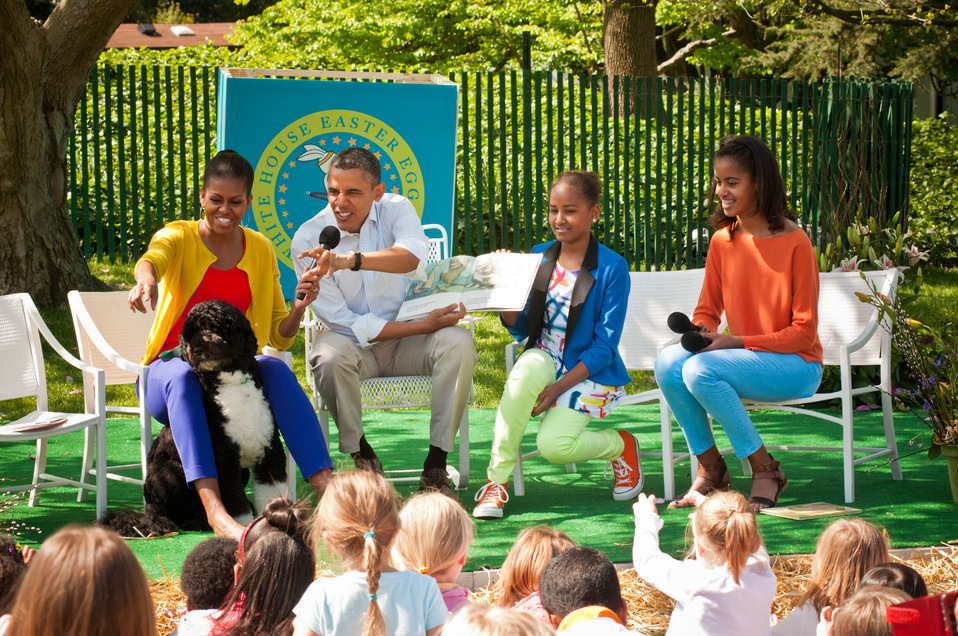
From left: First Lady Michelle Obama, President Barack Obama, daughters Sasha and Malia smile at the roars from children in the audience while President Obama reads, “Where the Wild Things Are” by Maurice Sendak on the Story Time Stage at the 2012 White House Easter Egg Roll Monday, April 9, 2012 in Washington, D.C. This years Easter Egg Roll is the 134th year of the largest annual public event at the White House. This year’s theme is “Let’s Go, Let’s Play, Let’s Move!” The theme is the emphasis of First Lady Michelle Obama’s Let’s Move initiative promoting health and wellness and encouraging children to lead healthy and active lives to solve the problem of childhood obesity.